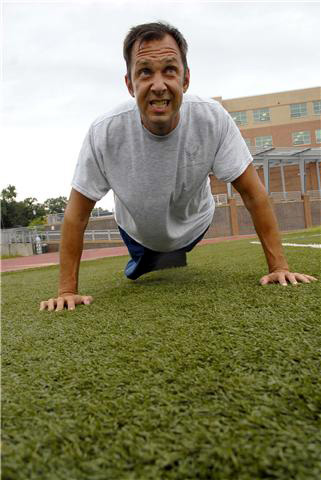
Blogging Airman sheds 70 pounds, ready to take on marathon

Senior Master Sgt. Kenneth Holcomb performs pushups for his fitness test, Sept. 8, 2009, in Washington, D.C. Although he needed to do 40 pushups to pass that portion of the test, Sergeant Holcomb did 50 and earned a perfect score. Sergeant Holcomb is the Air Force Public Affairs Agency media center superintendent.